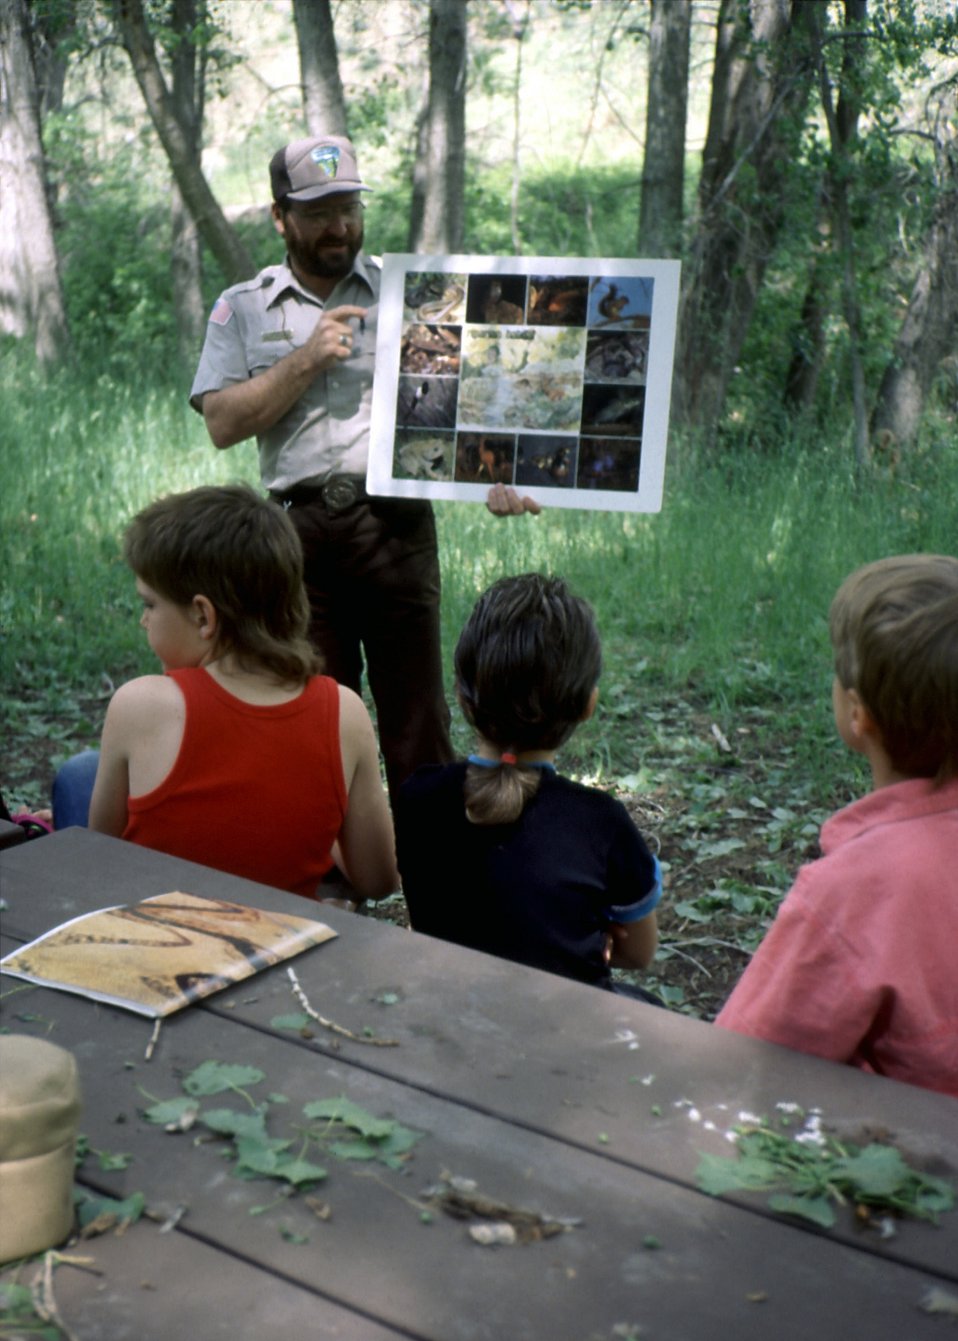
Childern and BLM Guy